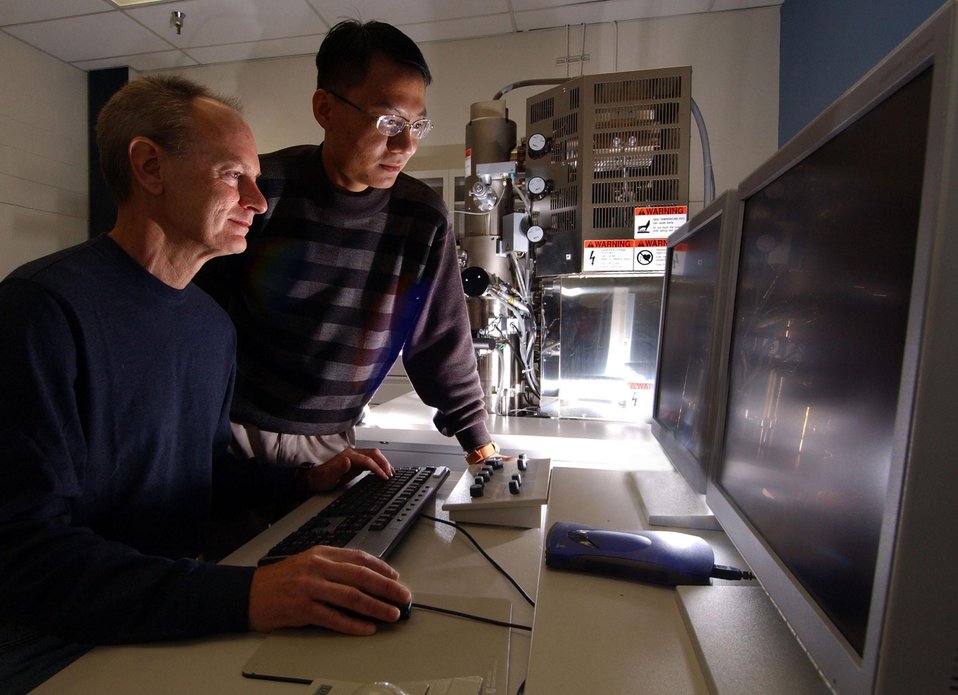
SANDIA RESEARCHER AND UNIVERSITY OF NEW MEXICO PH.D. STUDENT EXAMINE PLATINUM USING A SCANNING ELECTRON MICROSCOPE.

RESEARCHERS FROM DOE'S SANDIA NATIONAL LABORATORIES AND THE UNIVERSITY OF NEW MEXICO CENTER FOR MICRO ENGINEERED MATERIALS HAVE DEVELOPED A NEW WAY OF MIMICKING PHOTOSYNTHETIC PROTEINS TO MANIPULATE PLATINUM AT THE NANOSCALE. THE METHOD HAS THE POTENTIAL OF CHANGING THE METAL'S PROPERTIES AND BENEFITING EMERGING TECHNOLOGIES.